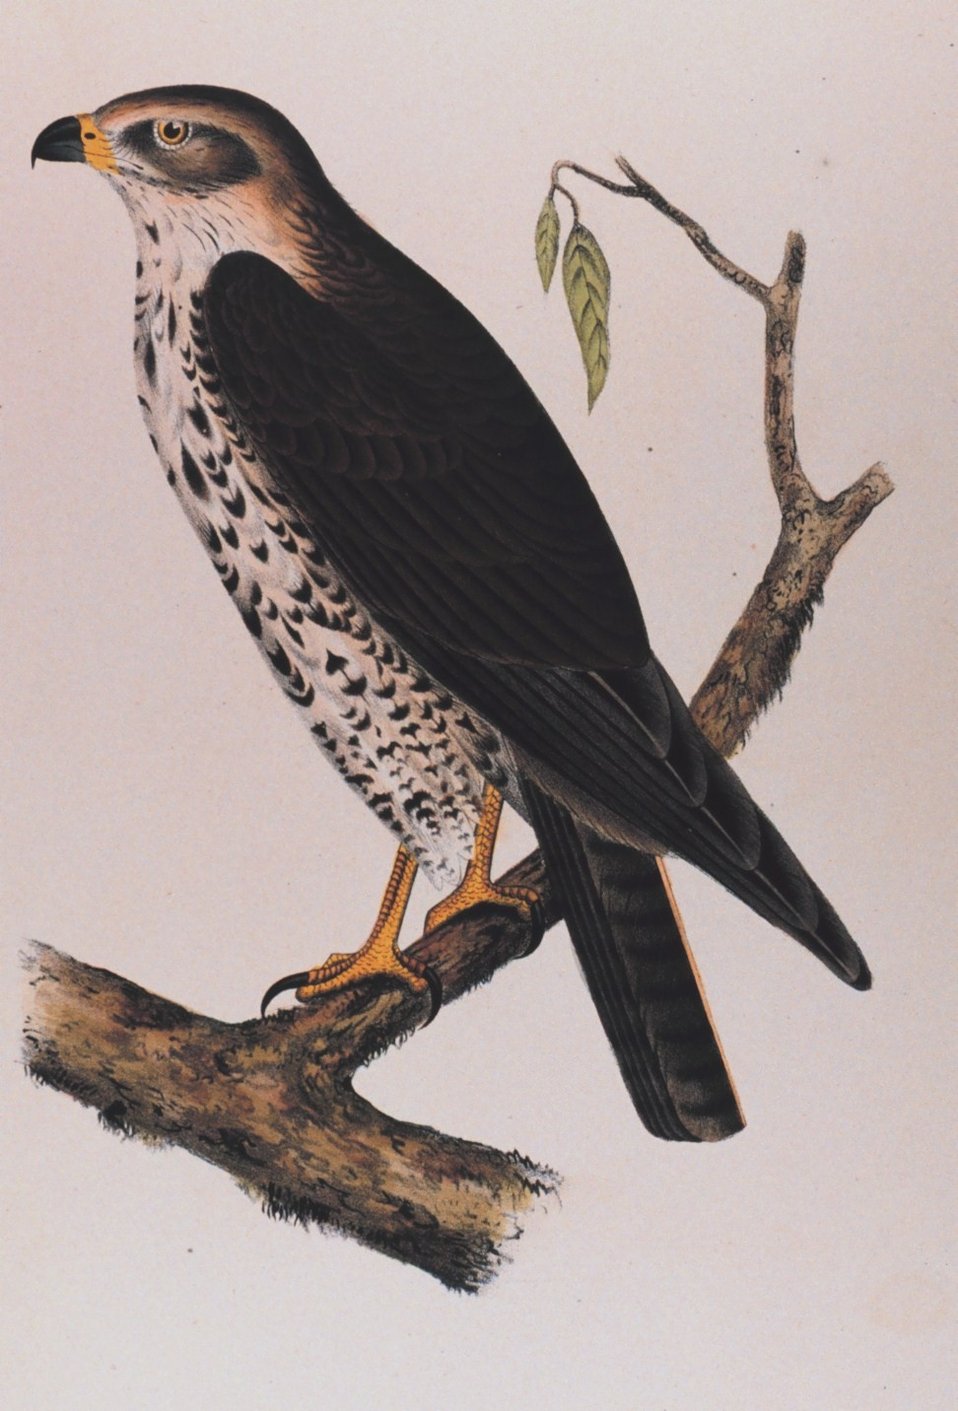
Buteo oxypterus, Cassin. A species of hawk. This image was included in: Reports of Explorations and Surveys .... Volume X. 1859. Plate XV. P. 16 of U. S. Pacific Railroad Explorations and Surveys 38th,39th, 41st Parallels. Call Number F593 .U58 1855 .